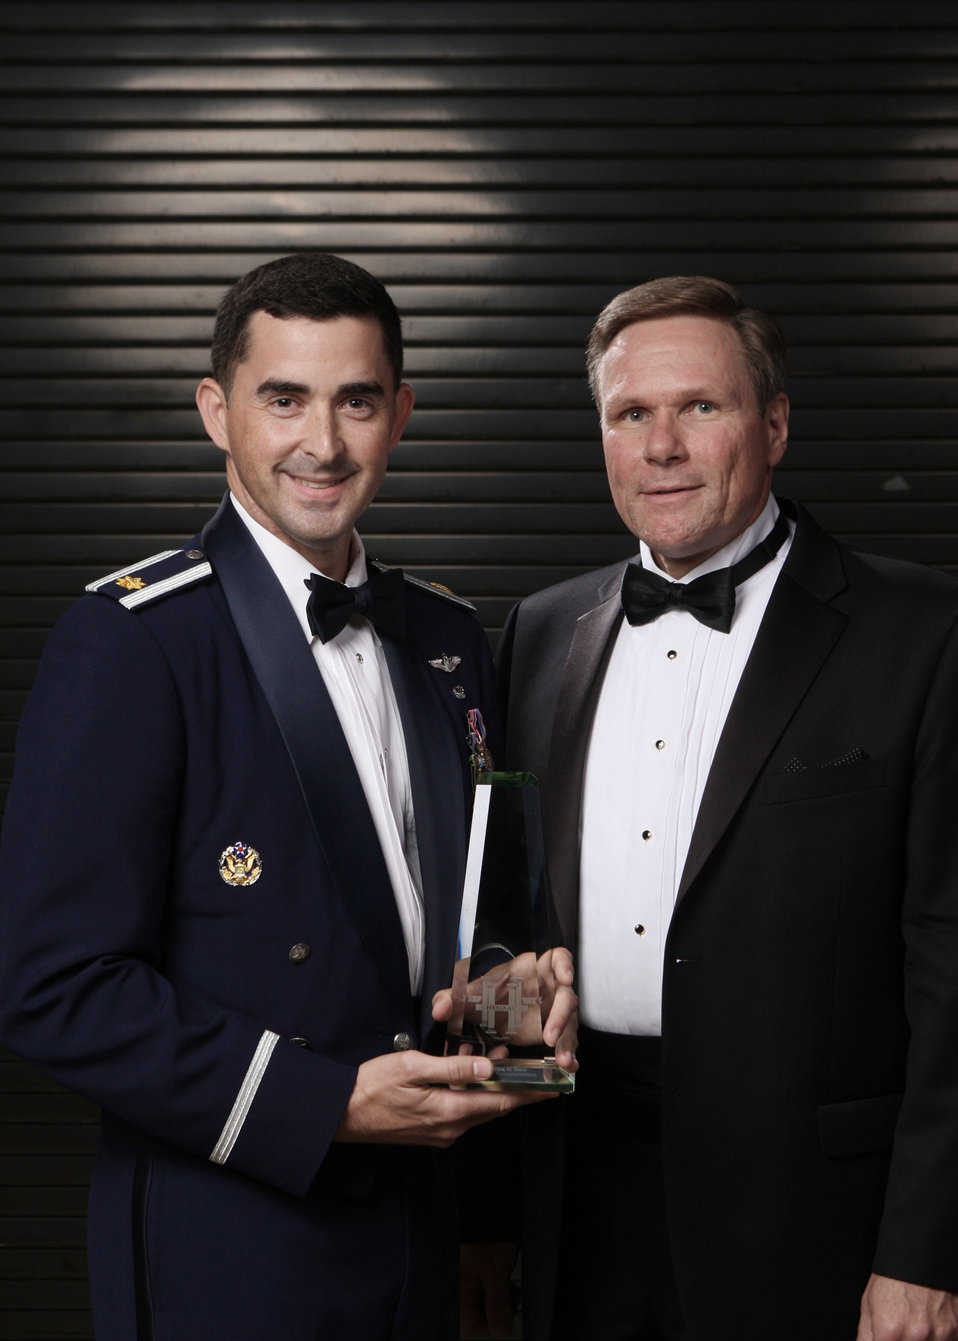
Major wins award

Maj. William Ochoa shows his 2009 Hispanic Engineer National Achievement Award to Dr. Werner Dahm, chief scientist of the Air Force. Major Ochoa received the award Oct. 9, 2009, during the HENAA conference in Long Beach, Calif.